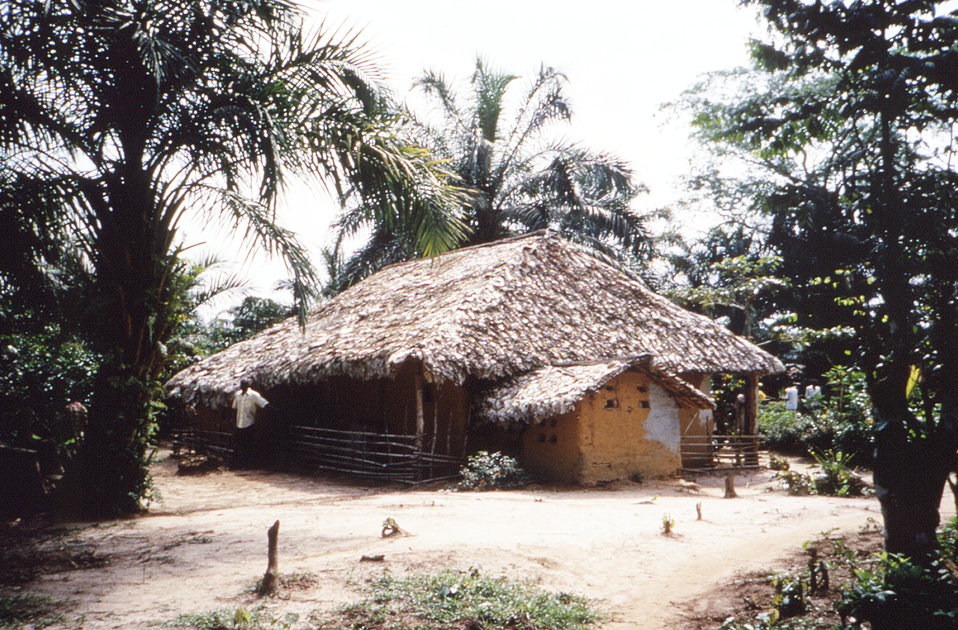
This image was created during an investigation into an outbreak of monkeypox, which took place in the Democratic Republic of the Congo (DRC), 1996 to 1997, formerly Zaire. This was a view of the village hut that the on-site epidemiologists called home during their field activities within the Katako-Kombe Health Zone, of the DRC.